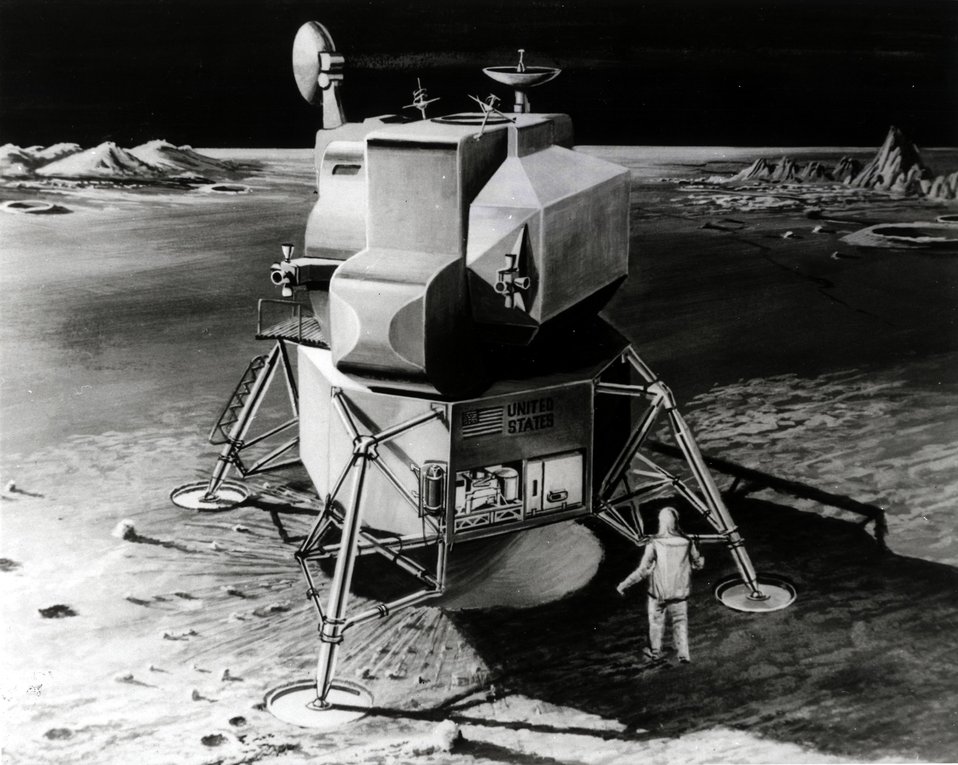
A cylindrical cask, containing a fuel capsule for the SNAP-27 nuclear generator will ride to the moon attached to the outside of the lunar module.